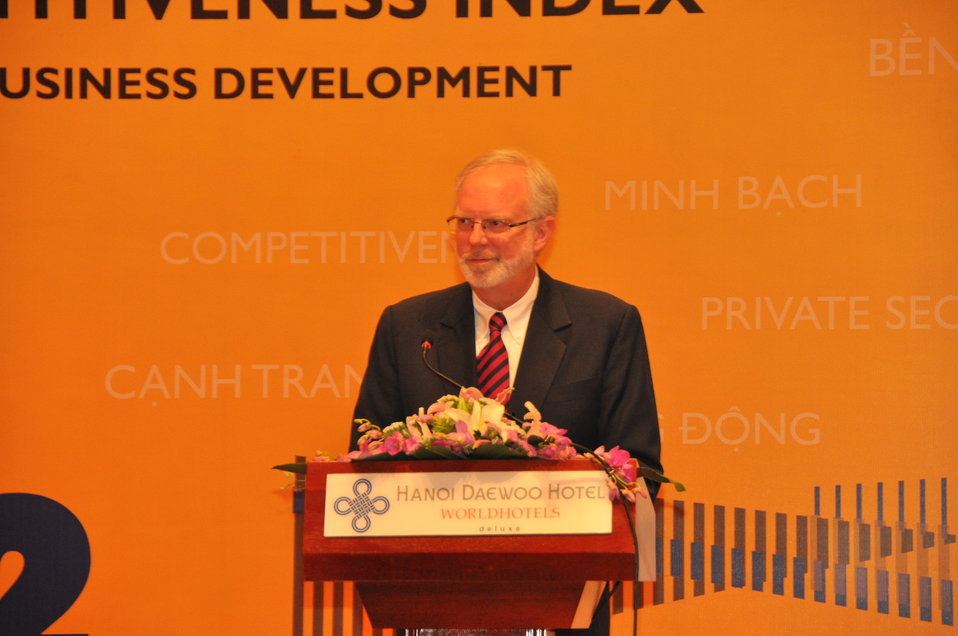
U.S. Ambassador David Shear speaks at the Provincial Competitiveness Index Launch, March 14, 2013

Hanoi, March 14, 2013